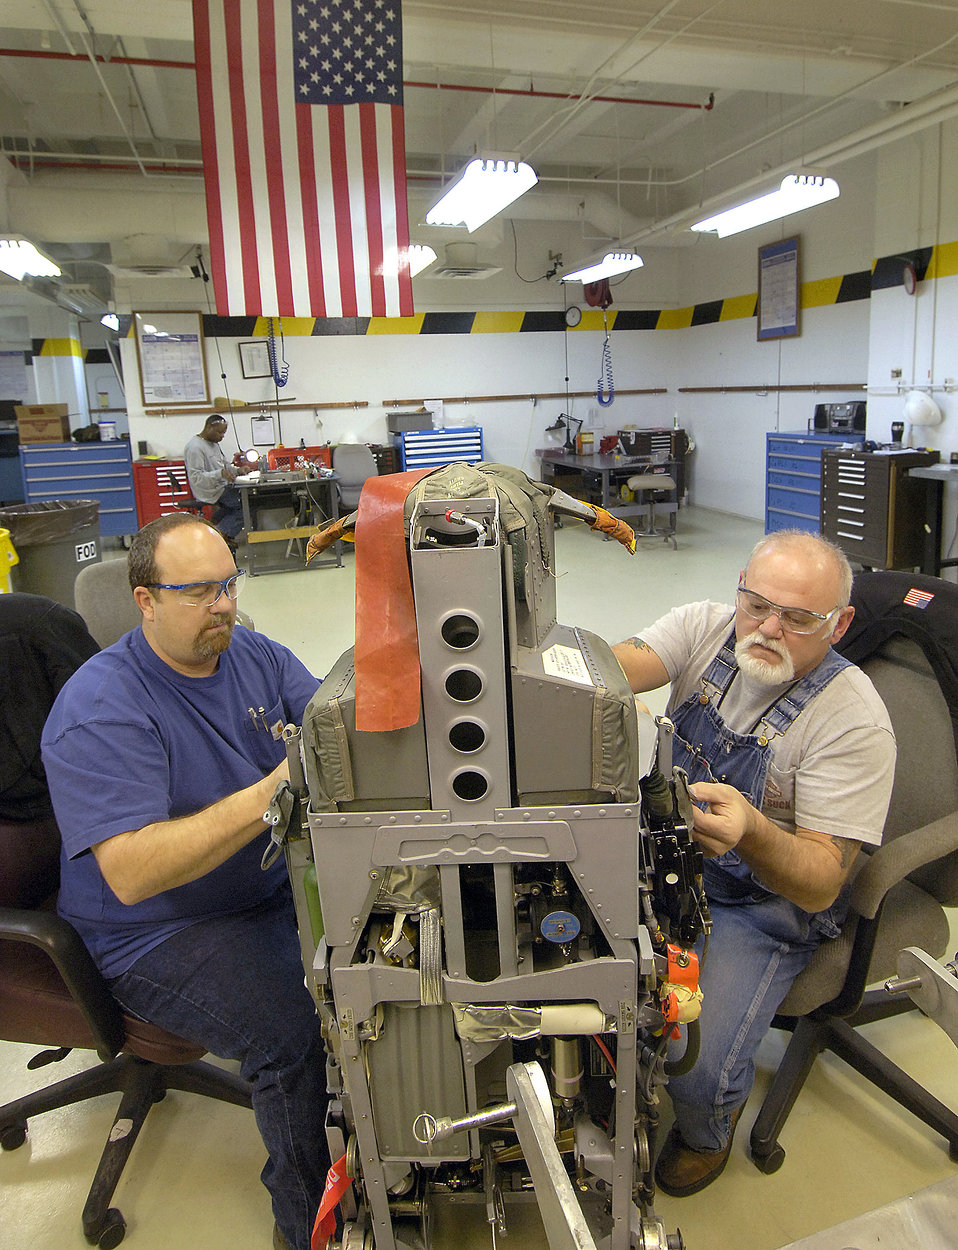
No margin for error at Tinker bomber egress shop

Jeff Hand and Stan Jackson put a B-1B Lancer seat back together after preventive maintenance March 2 at Tinker Air Force Base, Okla. Each seat holds 14 miniature explosive devices that synchronize in an emergency to help propel a strapped-in crew member from a doomed aircraft at zero to 80 mph in approximately two seconds.